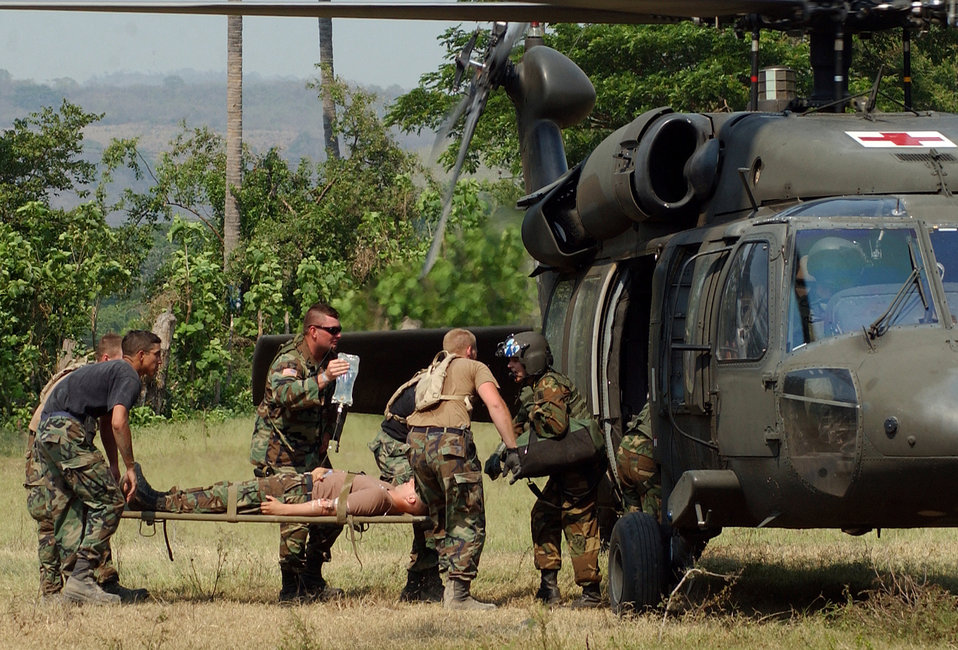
Practicing medicine in the field

LAS FLORES, El Salvador -- Army Sgt. Nichole Mueller instructs litter crewmembers Senior Airmen Neil Sutherland and Russ Ward on the proper loading procedures to get Army Sgt. George Ruf evacuated to a hospital during a medical evacuation exercise here April 19. The exercise tested the response capabilities of medics, a joint Army and Air Force construction crew and an aircrew from the 24th Medical Company supporting Joint Task Force Para Los Ninos. The exercise is a joint humanitarian readiness exercise providing schools and clinics around the San Vicente area hit hardest by multiple earthquakes in 2001. The Airmen are medics from Cannon Air Force Base, N.M.